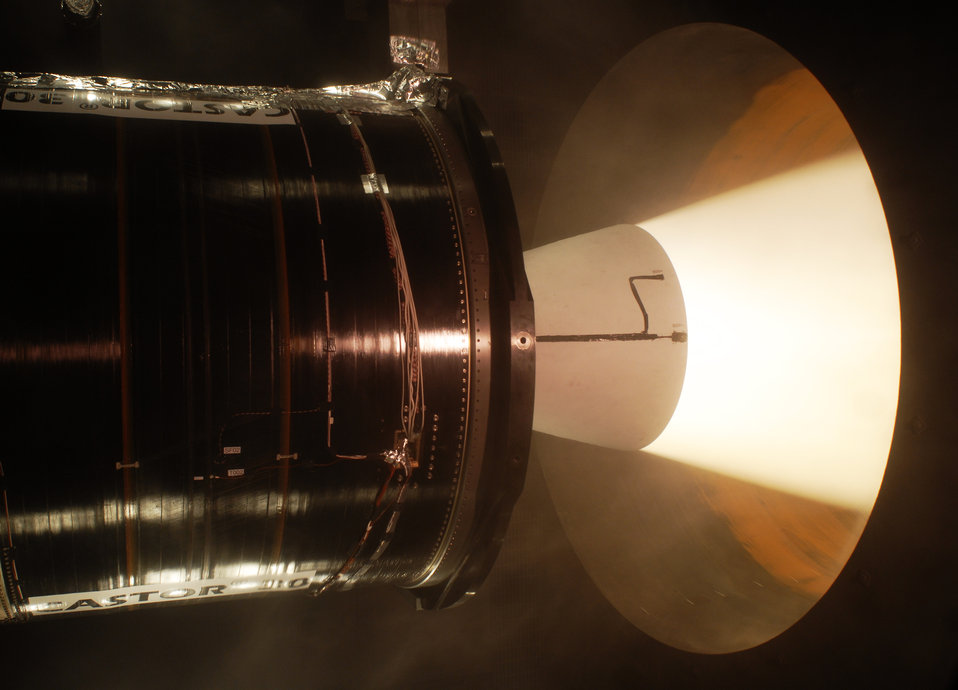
ATK Castor 30 ST1